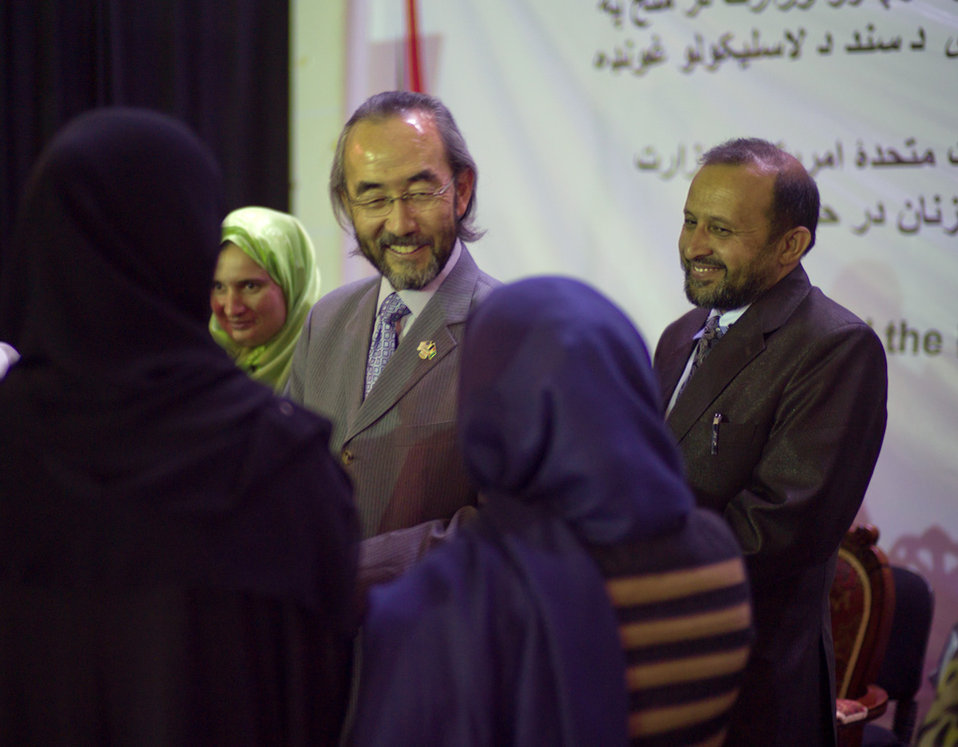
Ken Speaking with Interns